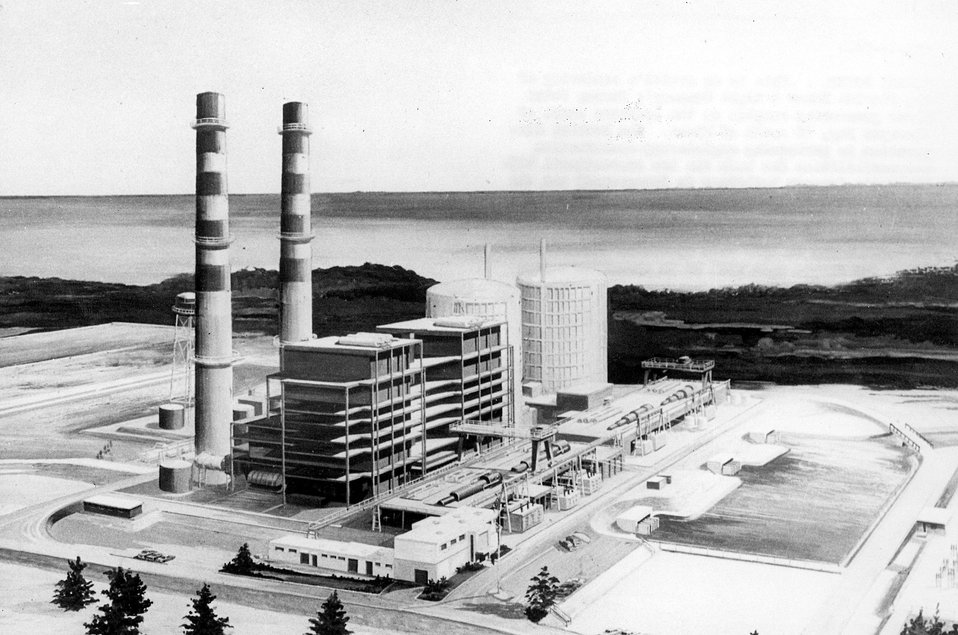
Turkey Point..This is an artist's rendering of the Florida Power & Light Company's Turkey Point power generating complex on the southern shore of Biscayne Bay, 30 south of Miami. Circa 1967.